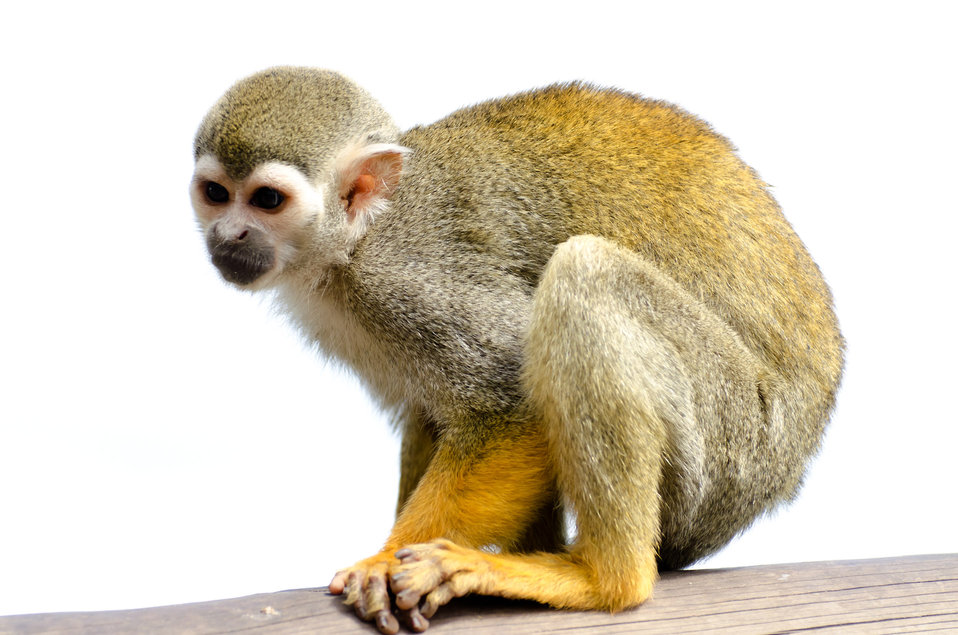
Squirrel monkey isolated on white background.